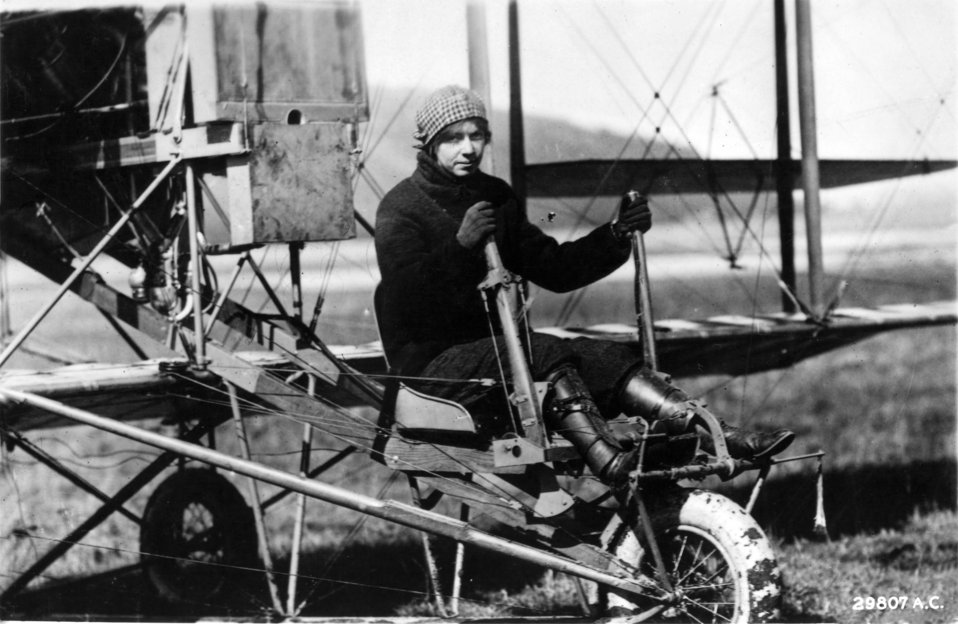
Ruth Bancroft Law (Oliver) (1887-1970)

EARLY YEARS -- Ruth Law becomes the first enlisted Army aviatrix June 30, 1917. Ruth Law enjoyed one of the longest and most colorful careers of early female aviators.